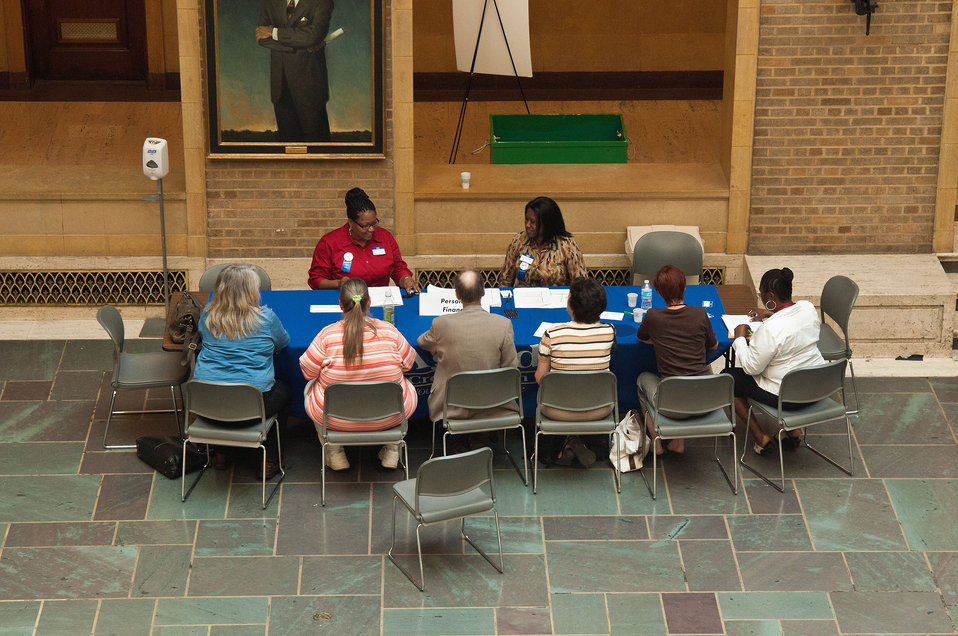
Agriculture Federal Credit Union representatives Barbara Campbell (left) and Theodora Ezekwerre (right) assist employees with personal finance questions during one of the many forums held for the Rural Development Cultural Transformation Day event held in Washington, D.C. on Thursday, July 12, 2012.